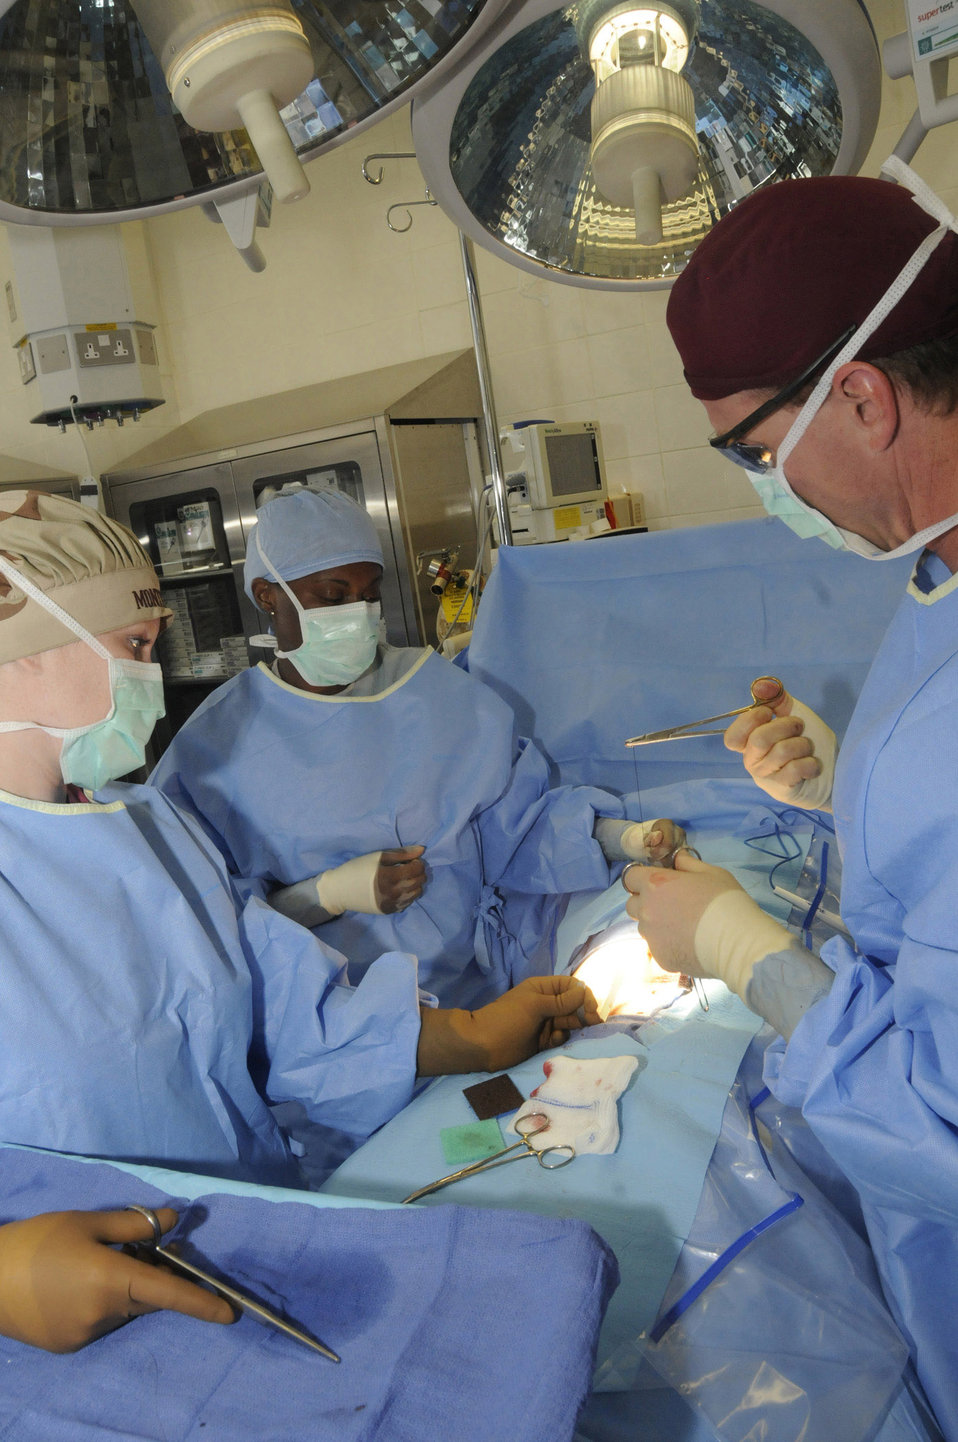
Surgeons return injured troops to action

Senior Airman Cara Montgomery and Senior Airman Brittney Hardrick assist Dr. (Maj.) Craig Kolasch, general surgeon, during the stitching of incisions after completing a laparoscopic hernia repair Dec. 23 at an undisclosed base in Southwest Asia. The three Airmen are assigned to the 379th Expeditionary Medical Group. Airman Montgomery is a surgical technician, and Airman Hardrick is a cardio pulmonary technician. All are deployed from Keesler Air Force Base, Miss., in support of Operations Iraqi and Enduring Freedoms and Joint Task Force-Horn of Africa.